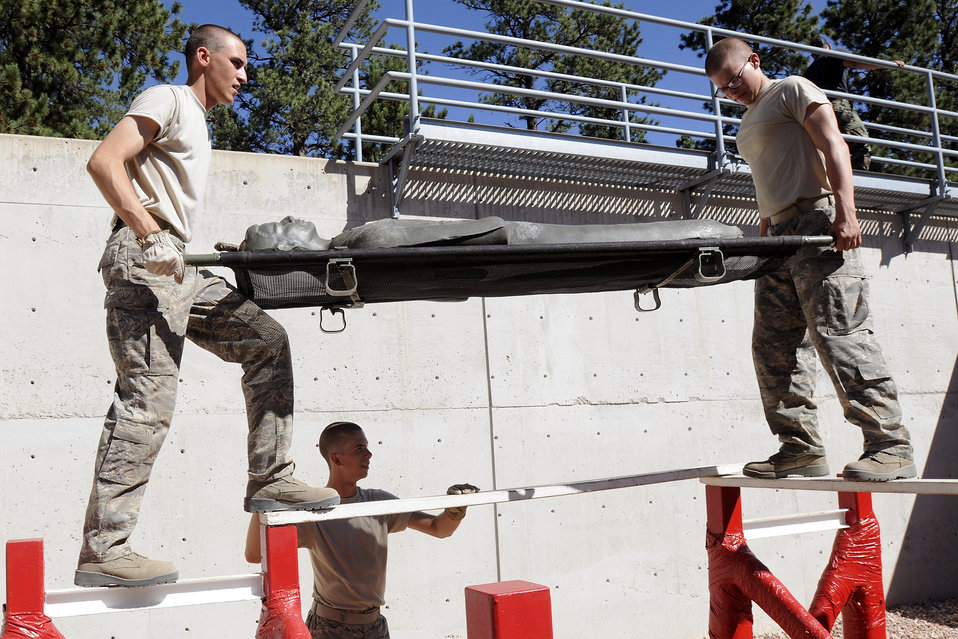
Cadets learn essential skills in Leadership Reaction Obstacle Course

Basic Cadet Dennis Murray and teammate Michael Hastriter Jr make their way through an obstacle carrying a dummy on a stretcher during the leadership reaction course at the U.S. Air Force Academy, Colo., July 16, 2010. The cadets learned essential problem solving and leadership techniques from the course.